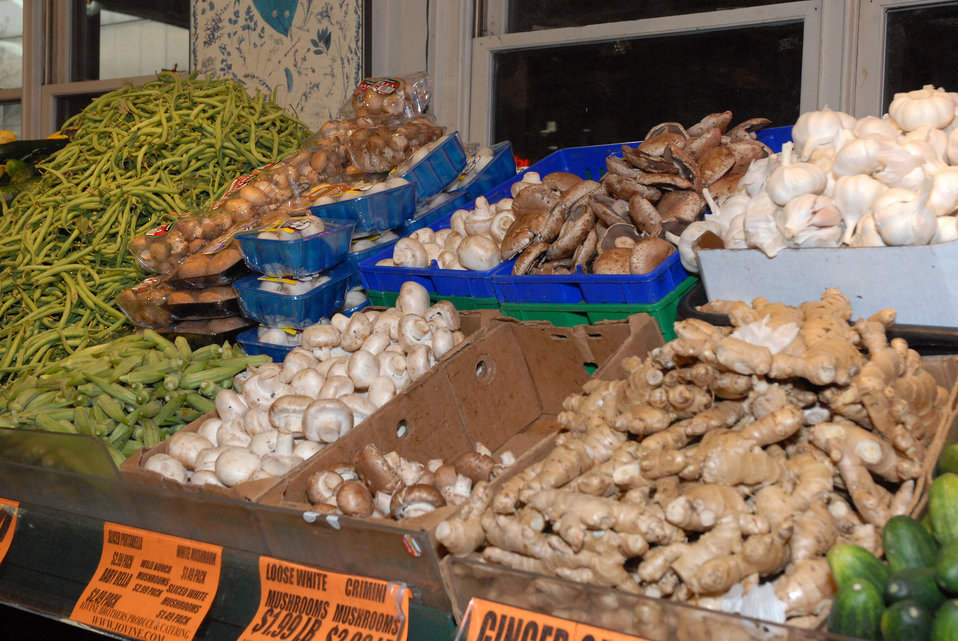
The Reading Terminal Market offers produce fresh from the field to the people of Philadelphia, Pennsylvania on March 26, 2007. There are Amish specialties, fruits, vegetables, meats, seafood, and poultry. Reading Terminal Market opened for business in 1892 with approximately 78,000 square feet and almost 800 spaces for vendors. The Market was revitalized in the 1990’s and today is still the gastronomic bazaar that its original planners had envisioned. Many of the historic Market stands survived the reconstruction and are once again filled with local produce, fresh eggs, milk, meats, poultry, seafood, handmade crafts, jewelry, and clothing. The Market is home to more than 80 merchants, two of whom are descendants of the original stand holders from a century before.